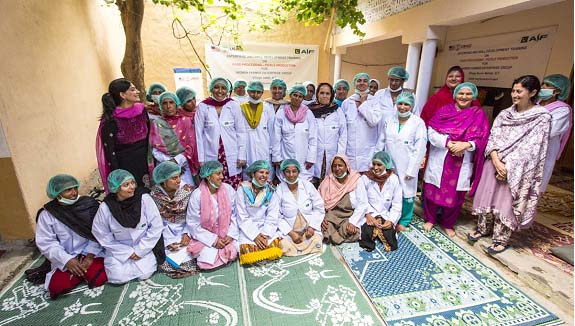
USAID's Agribusiness Project Women FEG for Food Processing - Pickle Production at Village Jabbi

This group of thirty-two women entrepreneurs in Jabbi village are learning how to start their own pickling business, with approximately $5,000 support from USAID.
www.usaid.gov/pk/db/sectors/growth/project 750.html